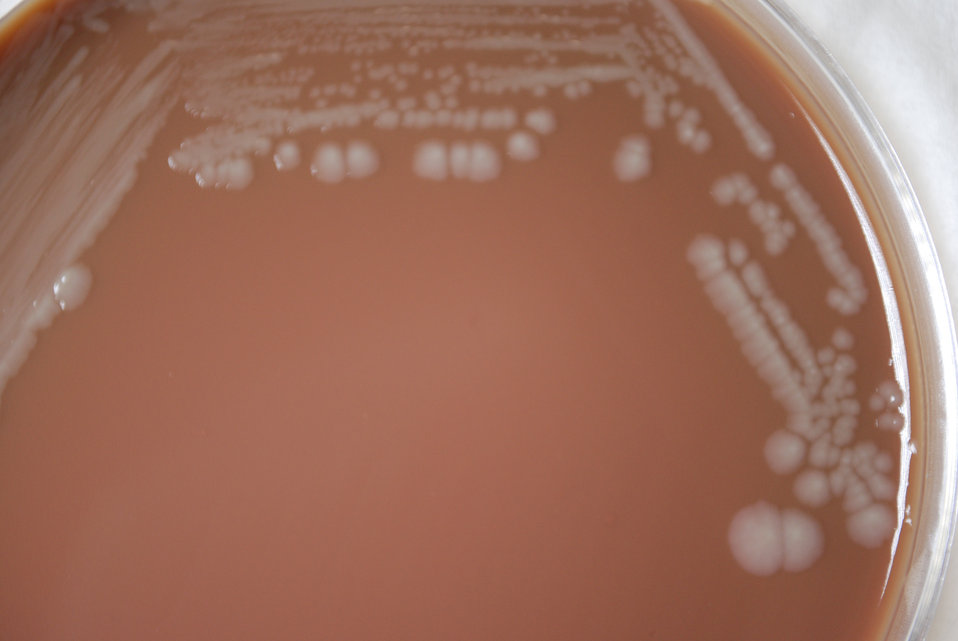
As a closer view of PHIL 12271, this photograph depicts the colonial morphology displayed by Gram-negative Burkholderia mallei bacteria, which was grown on a medium of chocolate agar, for a 72 hour time period, at a temperature of 37�C. B. mallei is the bacterium responsible for causing the infectious disease known as glanders.